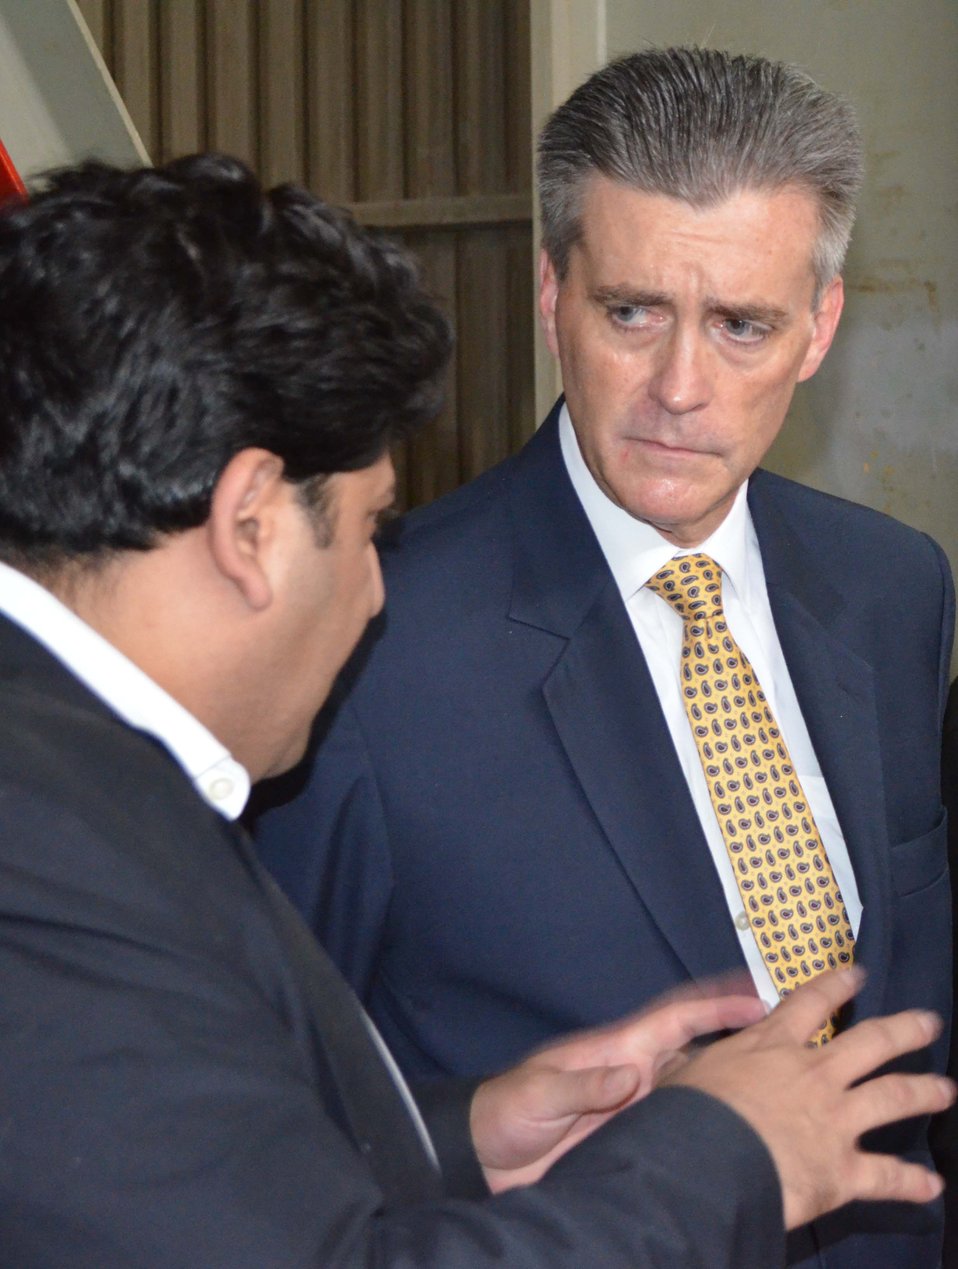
Ambassador Olson being briefed about the ongoing rehabilitation at JTPs